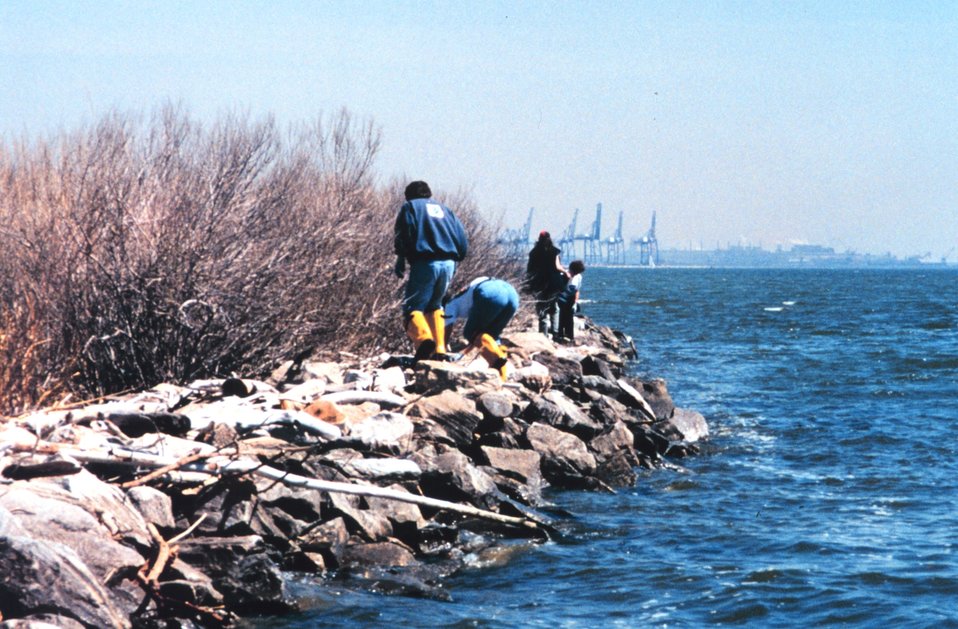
Volunteers helping clean up the wetlands and waterfront area around Fort McHenry in Baltimore Harbor. Here some are cleaning a rock riprap erosion mitigation structure.